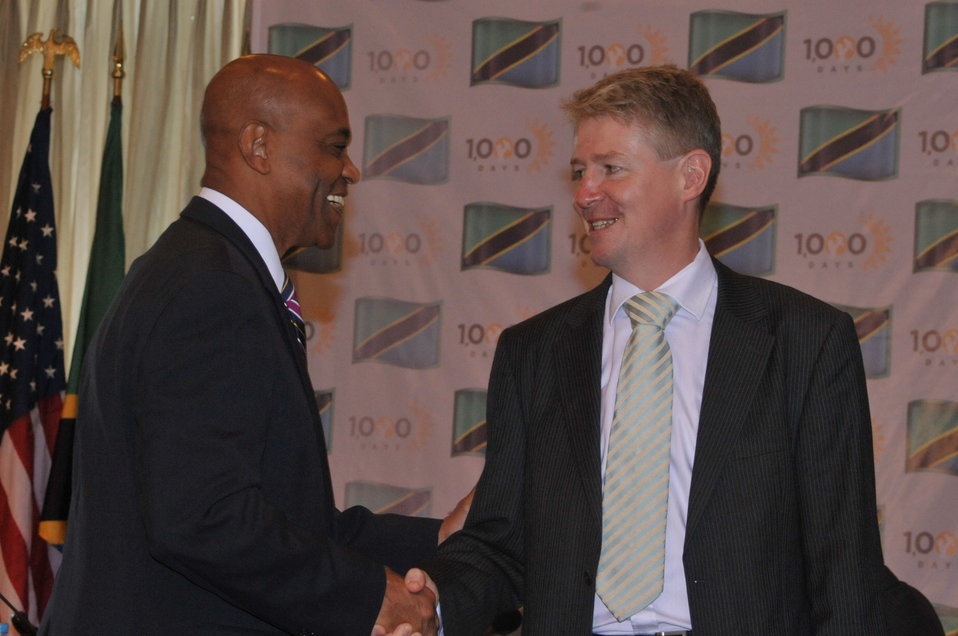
Ambassador Lenhardt Shakes Hands With Irish Deputy Prime Minister Gilmore

U.S. Ambassador to Tanzania Alfonso E. Lenhardt shakes hands with Irish Deputy Prime Minister Tanaiste Eamon Gilmore at the High-Level Meeting on Nutrition and 1,000 Days Initiative in Dar es Salaam, Tanzania, on June 12, 2011.